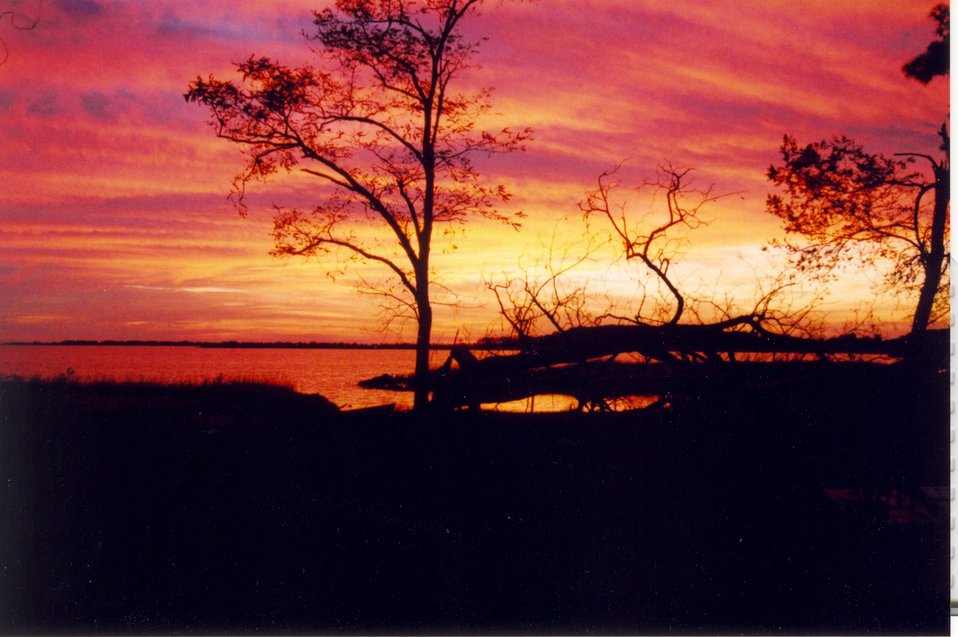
Orange Halloween sunset.